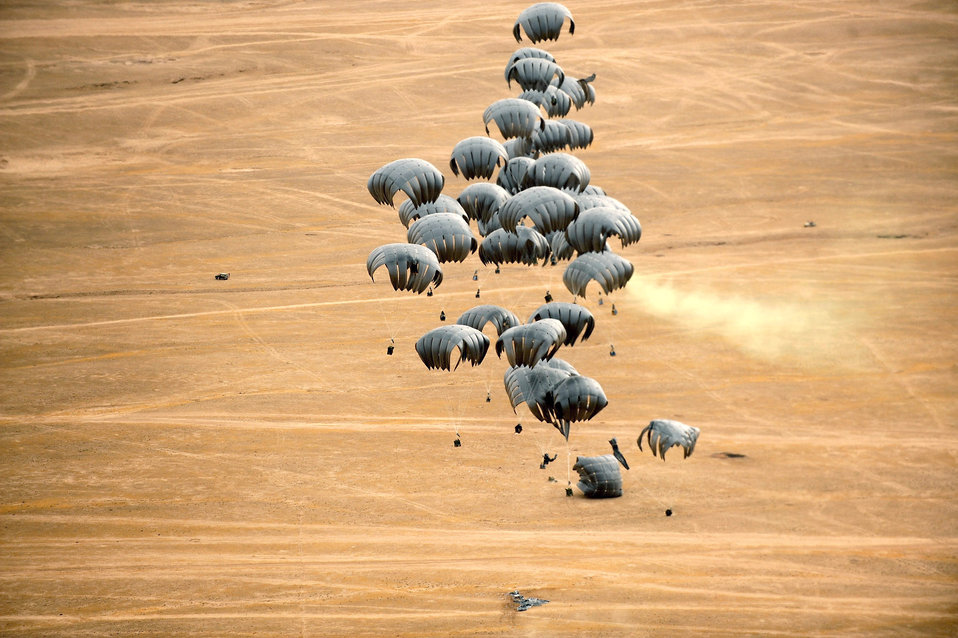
Operation Enduring Freedom

Forty container-delivery-system bundles parachute to the ground from a C-17 Globemaster III May 9, 2010, over a drop zone in Afghanistan.